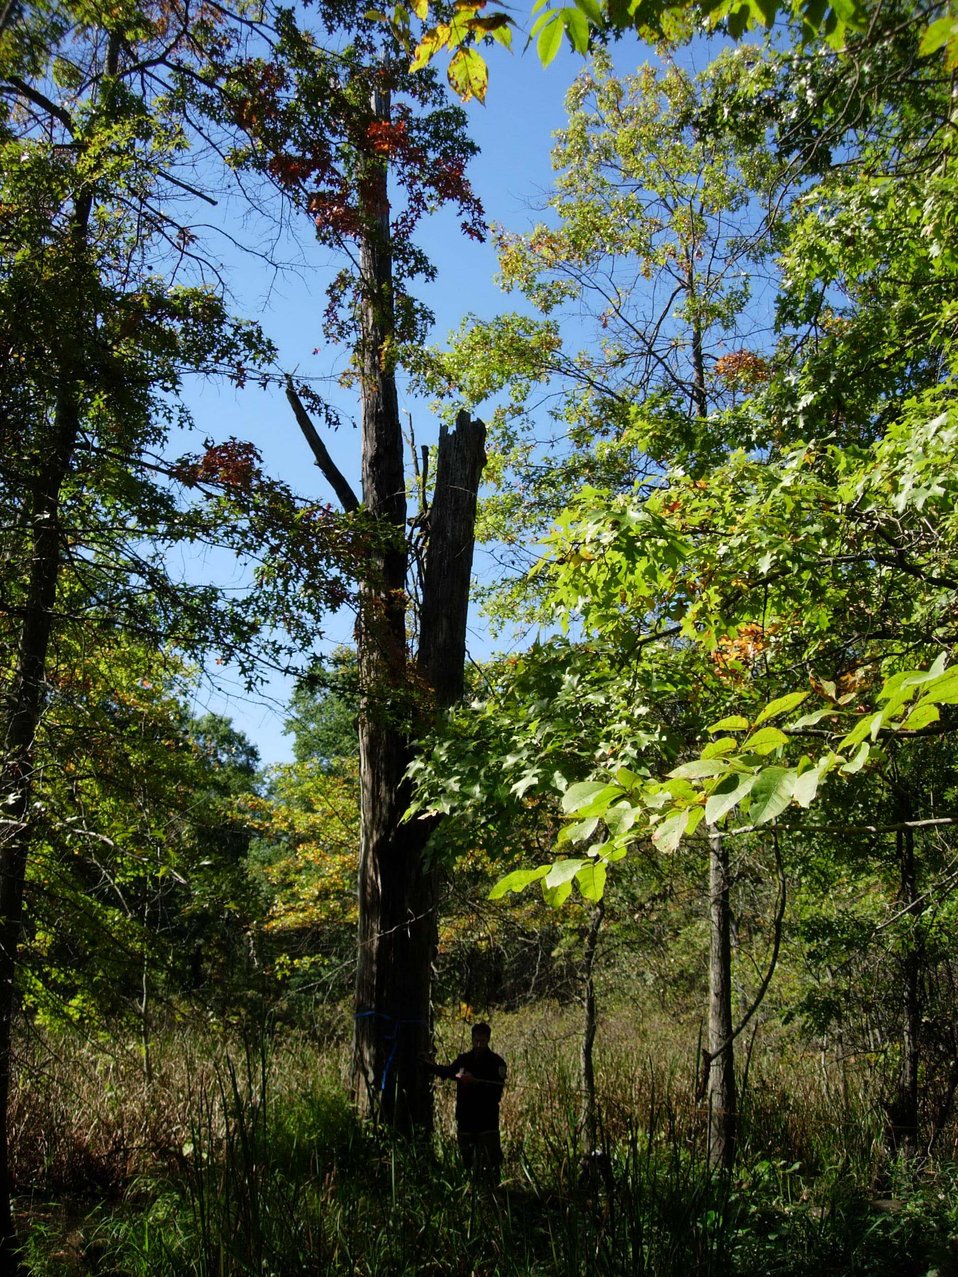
Indiana Bat Roost Tree

Credit: USFWS; Marilyn Kitchell

This is the first Indiana bat maternity roost identified at Great Swamp National Wildlife Refuge. In summer, Indiana bats roost under the loose or peeling bark of dying trees.